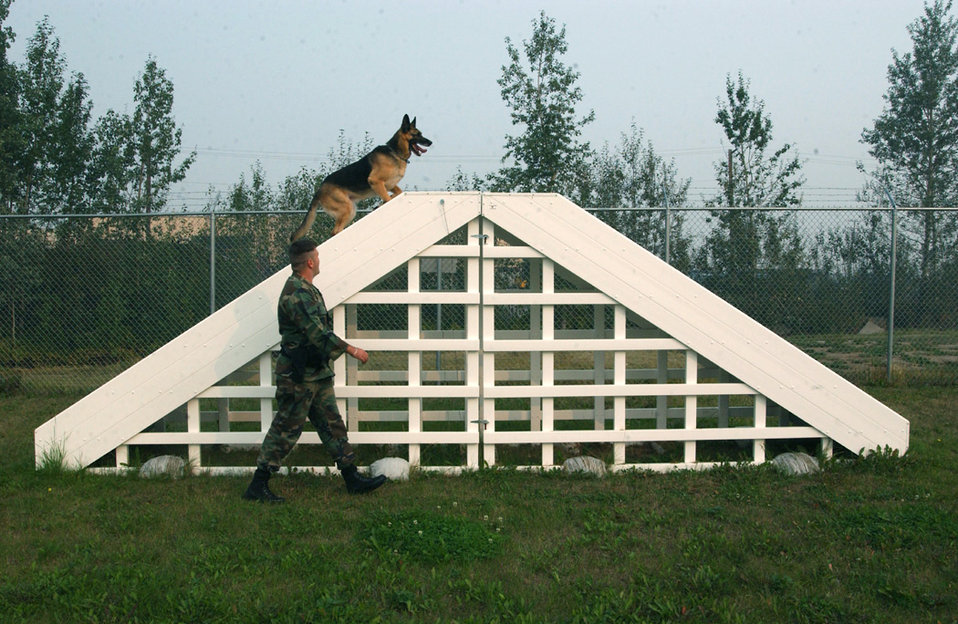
Dog patrol

EIELSON AIR FORCE BASE, Alaska -- Staff Sgt. Robert Houp guides Rin Tin, a military working, up a staircase during training Aug. 18. Military working dogs here provide anti-terrorism and security to the base as well as to deployed locations worldwide. Rin Tin's day usually begins at 4 a.m. with feeding and a seven-point checkup by his handler. Then comes grooming, a rub down, obedience training and a run through the confidence course before beginning the day on patrol. Sergeant Houp and the 7-year-old 98-pound German shepherd are assigned to the 354th Security Forces Squadron.